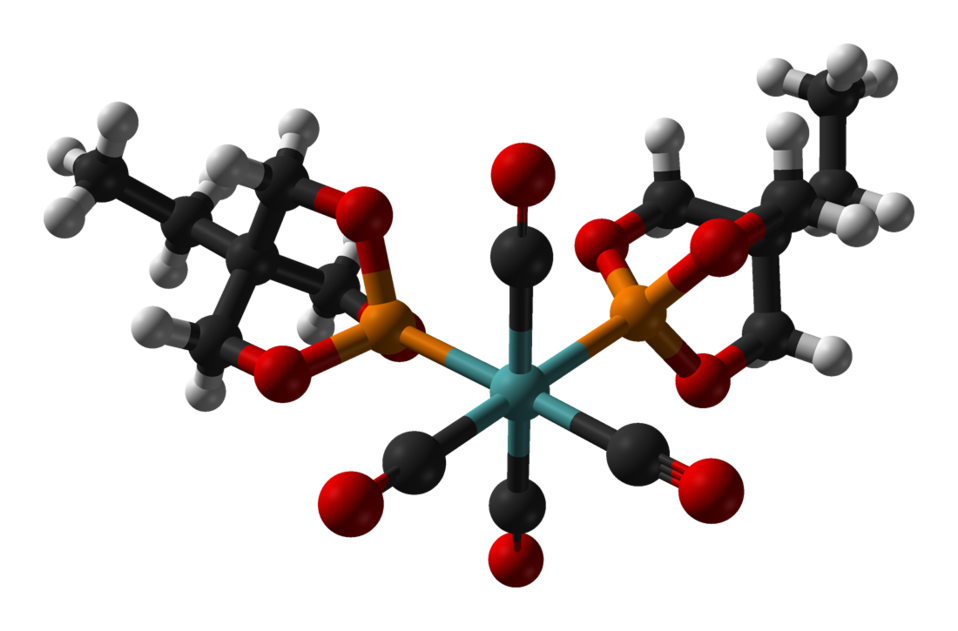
Ball-and-stick model of the caged phosphite complex bis(trimethylolpropane phosphite)molybdenum tetracarbonyl, [(EtCage)2Mo(CO)4], as found in the crystal structure. Colour code: Carbon, C: black Hydrogen, H: white Phosphorus, P: orange Oxygen, O: red Molybdenum, Mo: turquoise Crystal structure by X-ray diffraction from Organometallics (2007) 26, 6832–6838. Model constructed in CrystalMaker 8.1. Image generated in Accelrys DS Visualizer.